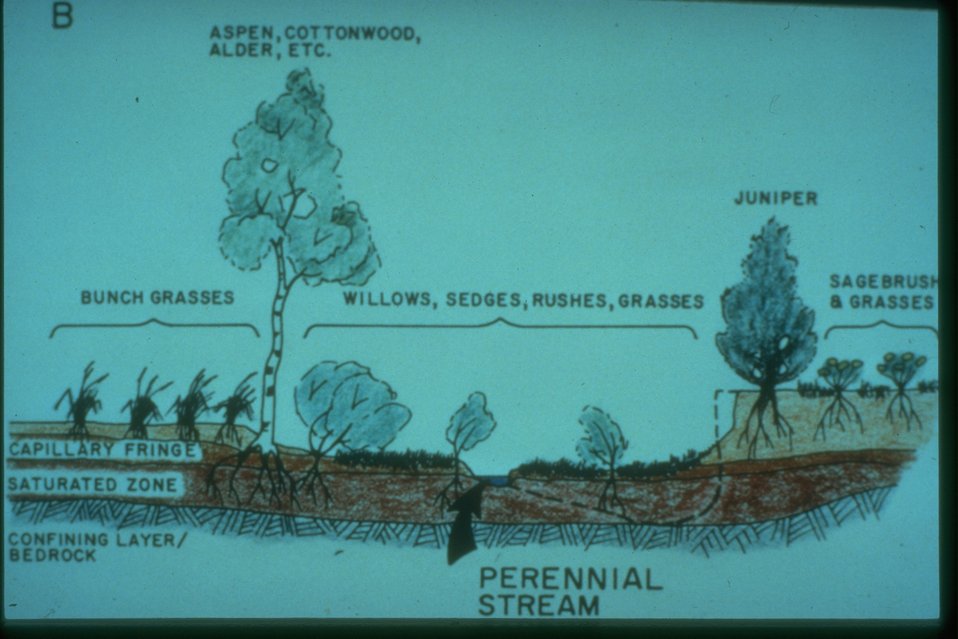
Riparian artwork diagram.